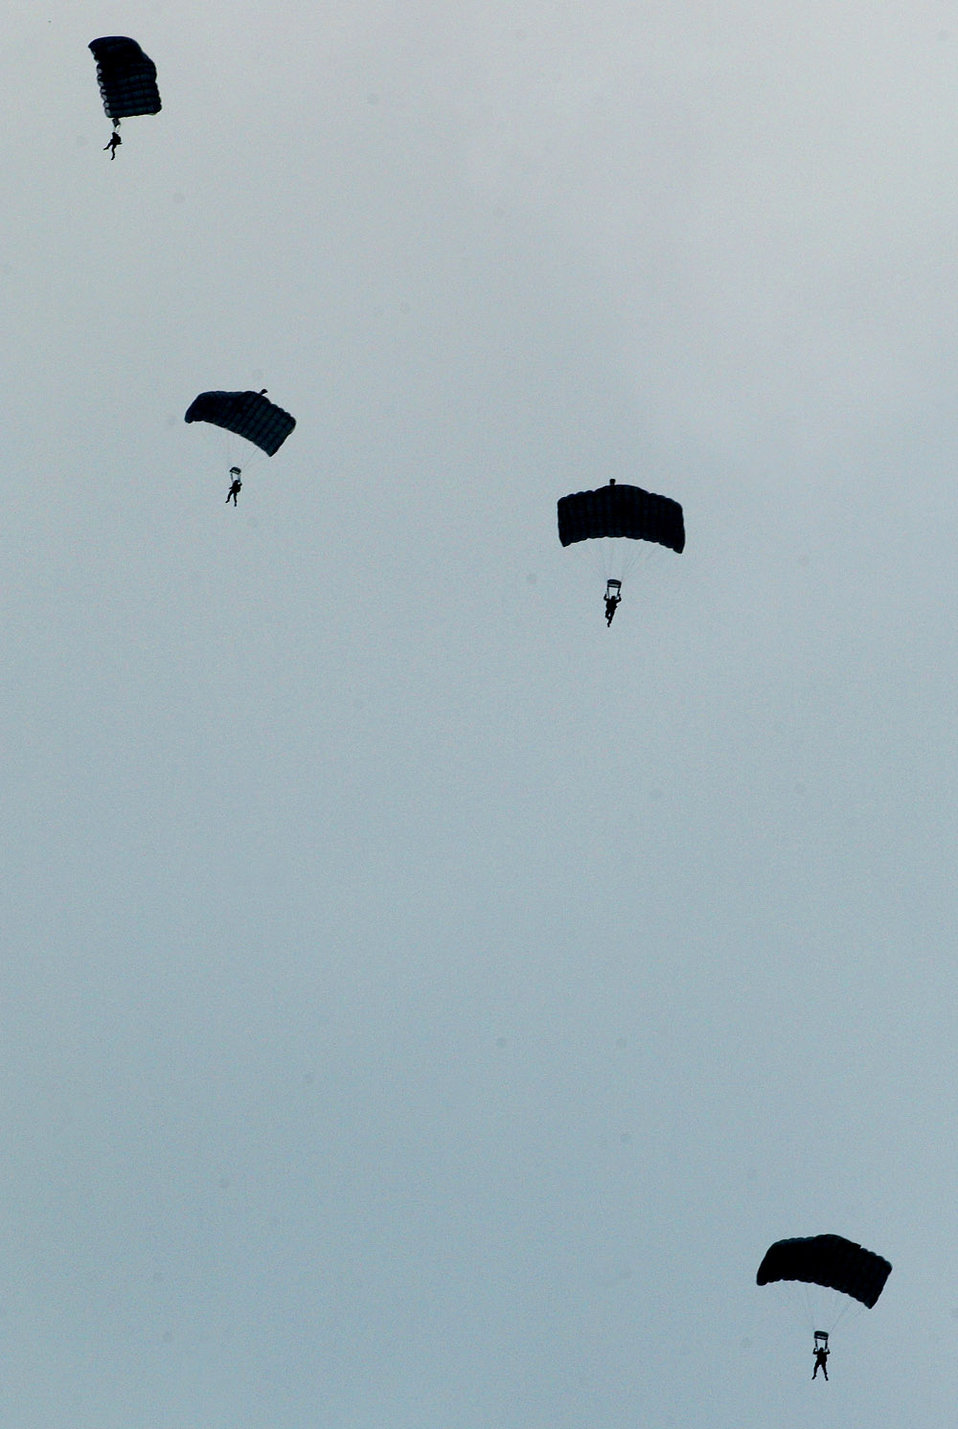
Proficiency paradrop

Pararescuemen conduct a parachute drop Oct. 19 on Kadena Air Base, Japan. The Airmen train to maintain proficiency for the defense of Japan and to meet U.S. obligations. The pararescuemen are capable of conducting search-and-rescue missions under most conditions and have saved the lives of both U.S. military and Okinawans.